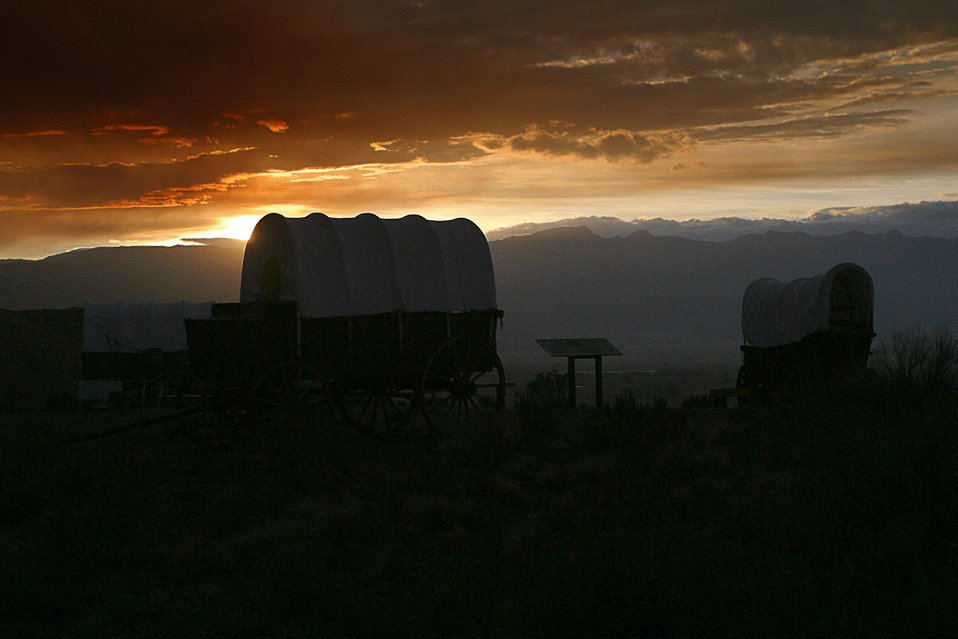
October sunset on wagon encampment at National Historic Oregon Trail Interpretive Center.